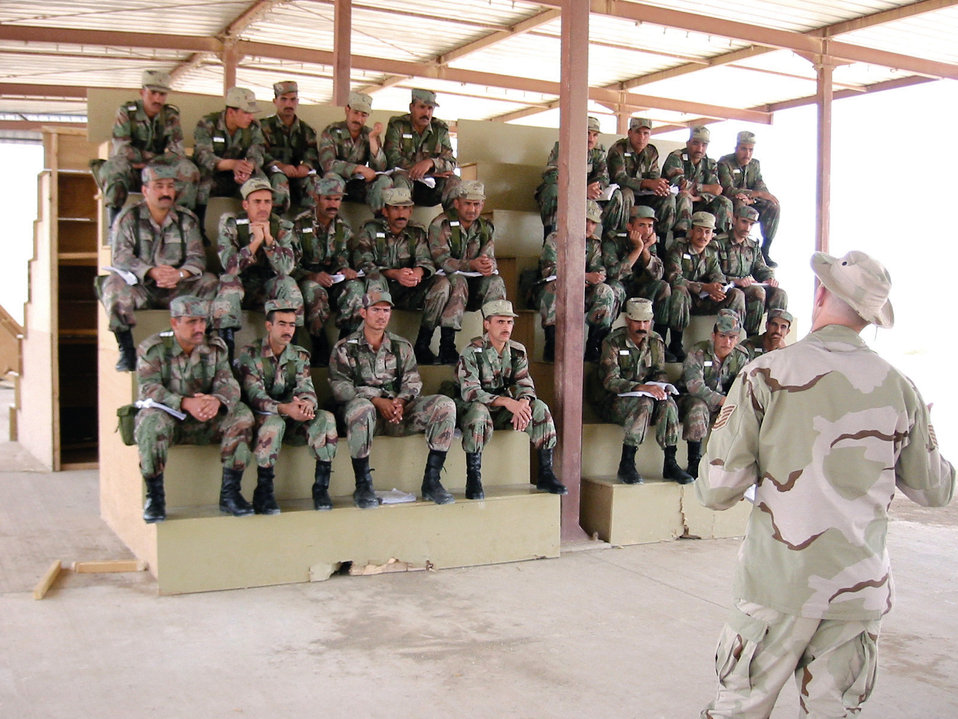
Airmen help train Iraqi soldiers

KIRKUSH MILITARY TRAINING BASE, Iraq -- An Air Force professional military education instructor teaches Iraqi students here. He is one of 28 Air Force instructors deployed to Iraq to train noncommissioned officers of the new Iraqi army.